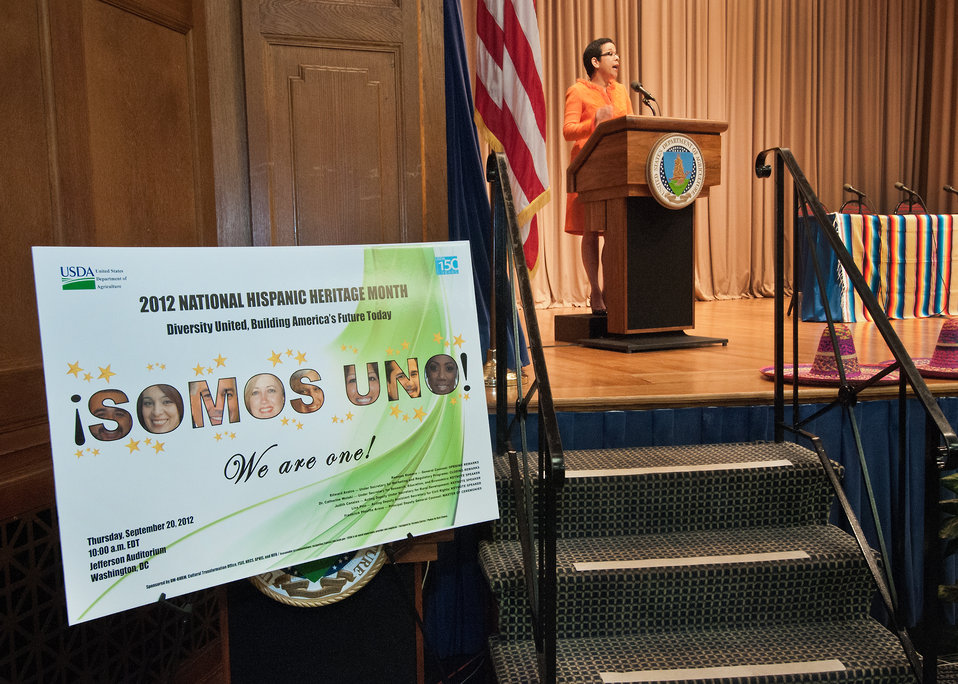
Agriculture General Counsel Ramona Romero gives the opening remarks at the U. S. Department of Agriculture (USDA) 2012 Hispanic Heritage Month in Washington, D.C. on Thursday Sept. 20, 2012. General Counsel Romero spoke of the cultural, diverse and economic contributions Hispanic Americans have made to the United States. The theme of the event was, “SOMOS UNO” “We Are One” Diversity United, Building America’s Future Today.